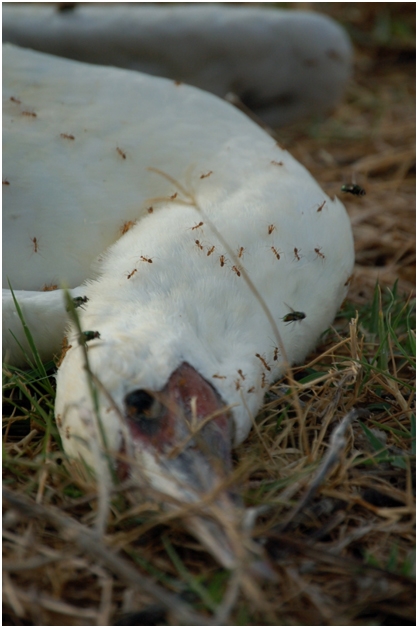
Red-footed booby and ants - Johnston Atoll NWR

Yellow ants swarm a red-footed booby bird carcass.